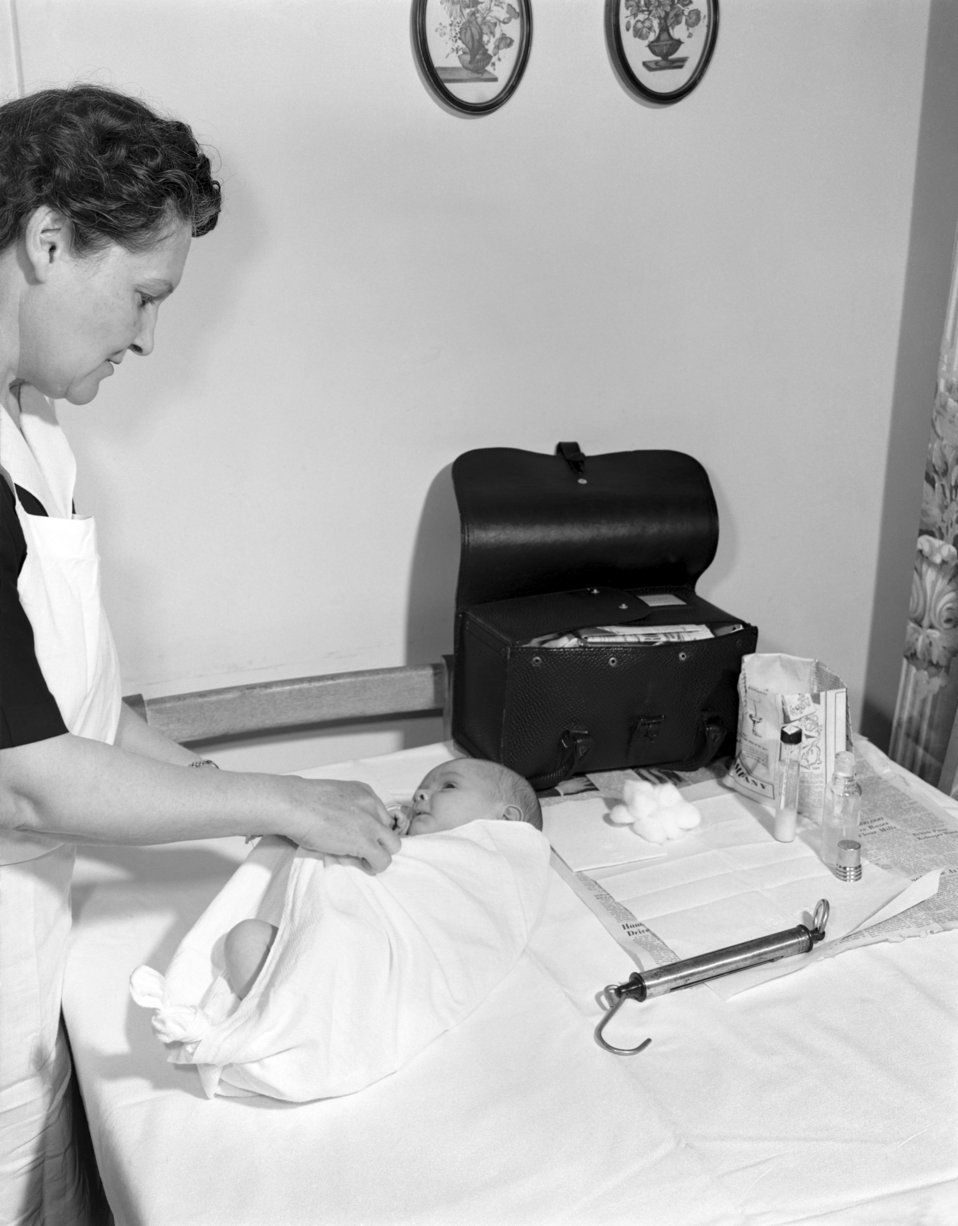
Public Health Nursing Oak Ridge 1947

3392-h DOE photo Ed Westcott 4-15-1947 Publicity for National Nurse Week Oak Ridge Tennessee